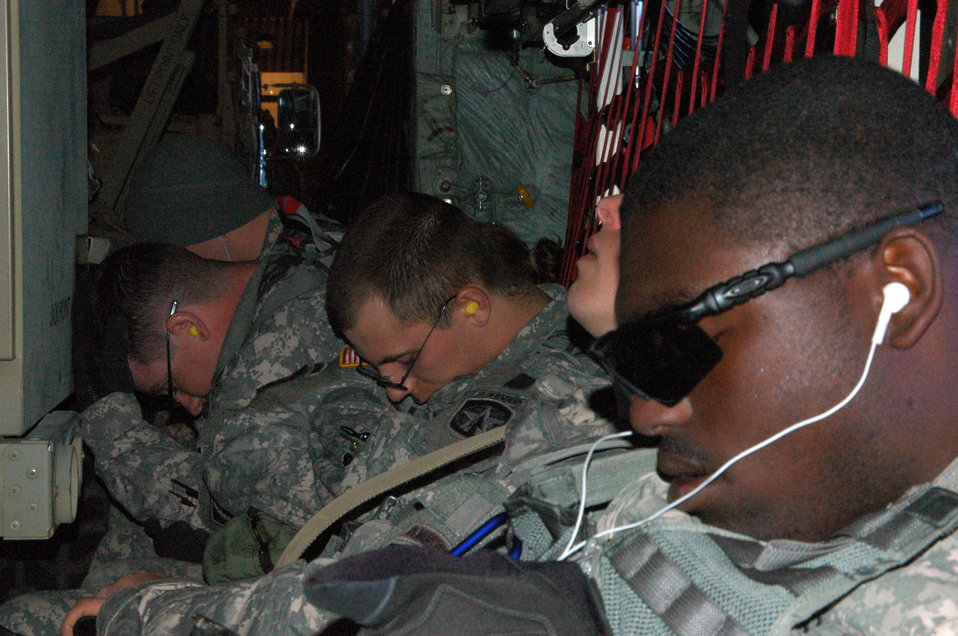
Airmen deliver Soldiers, communication equipment to Haiti

Army Spc. Julian Johnson (right) and other Soldiers from the 82nd Airborne Division get some rest Jan. 27, 2010, enroute to Port-au-Prince, Haiti. Specialist Johnson and more than 10 Soldiers in his unit flew on an Air Force Reserve C-130 Hercules to Haiti where they deployed in support of earthquake relief operations. Approximately 50 members of the 133rd Airlift Wing are deployed to Muniz Air Base, Puerto Rico, in support of Coronet Oak, operated by the 35th Expeditionary Airlift Squadron.